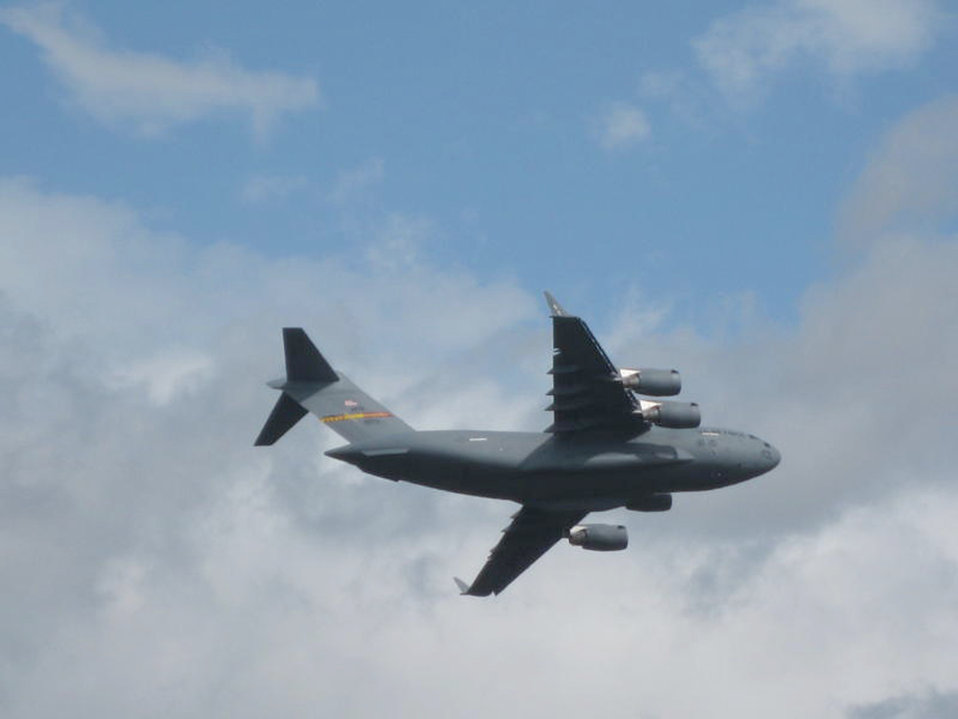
'Royal International Air Tattoo'

A C-17 Globemaster III participates at the Royal International Air Tattoo July 17, 2010, at Royal Air Force Fairford, England. The tattoo is held annually as